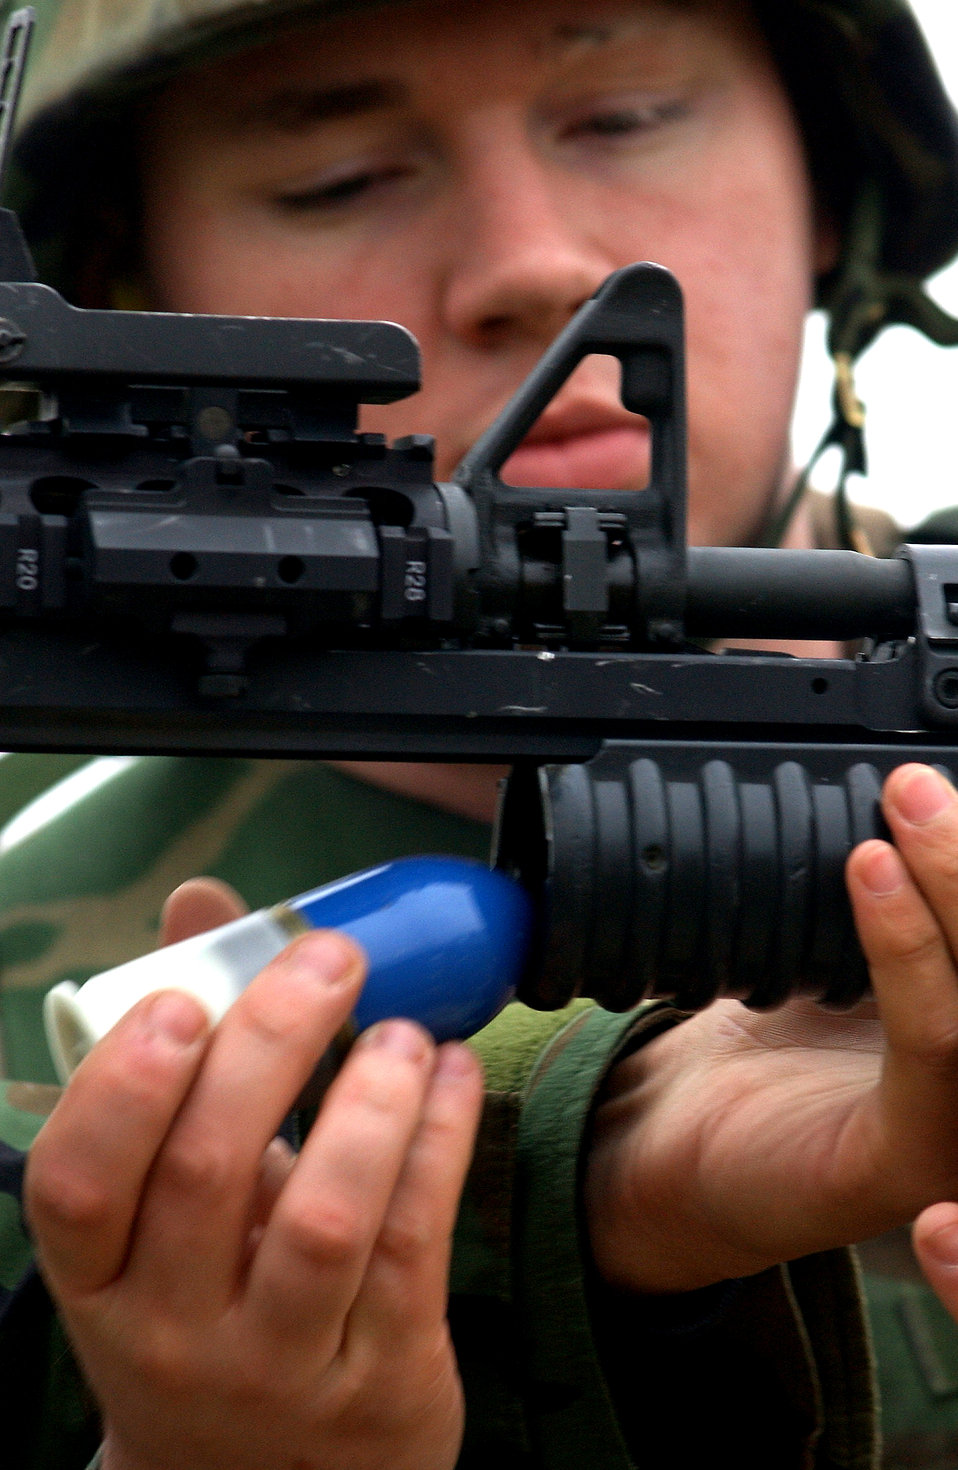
Loaded

Senior Airman Bryan Ables loads a 40 mm practice round into an M203 grenade launcher during fire arms training Jan. 11 at Cao Malinisio fire range, Italy. Airmen participate in training to complete their weapons qualification. Airman Ables is with the 31st Security Forces Squadron.